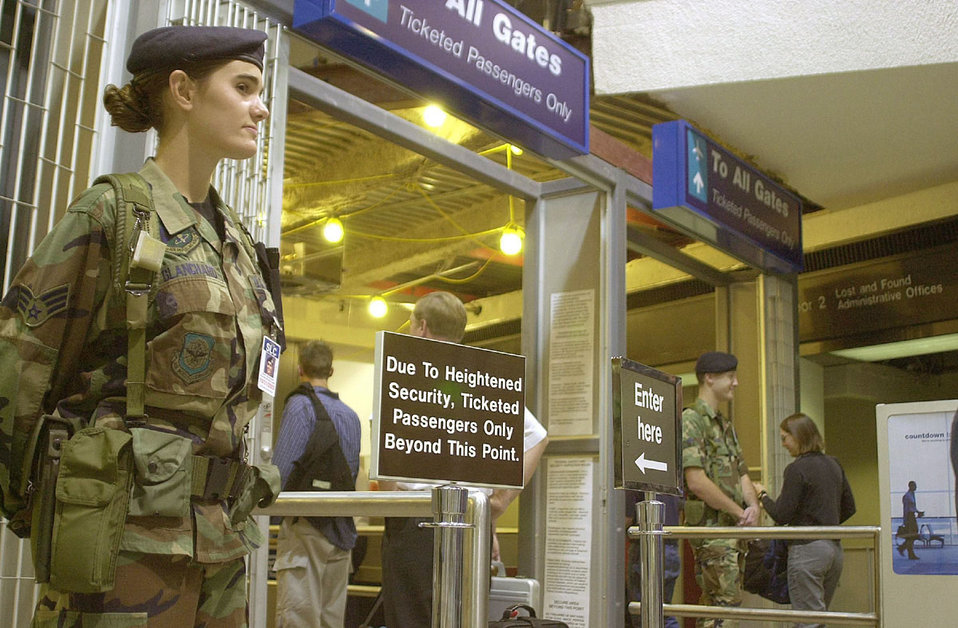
Beefed Up Security

OPERATION NOBLE EAGLE -- Senior Airman Emery Blanchard (left), and Senior Airman Andrew Haywood, both from the Utah Air National Guard's 151st Security Forces Squadron, are an added security measure at the Salt Lake City International Airport on Sept. 30, 2001. The unit has been activated in support of Operation Noble Eagle.